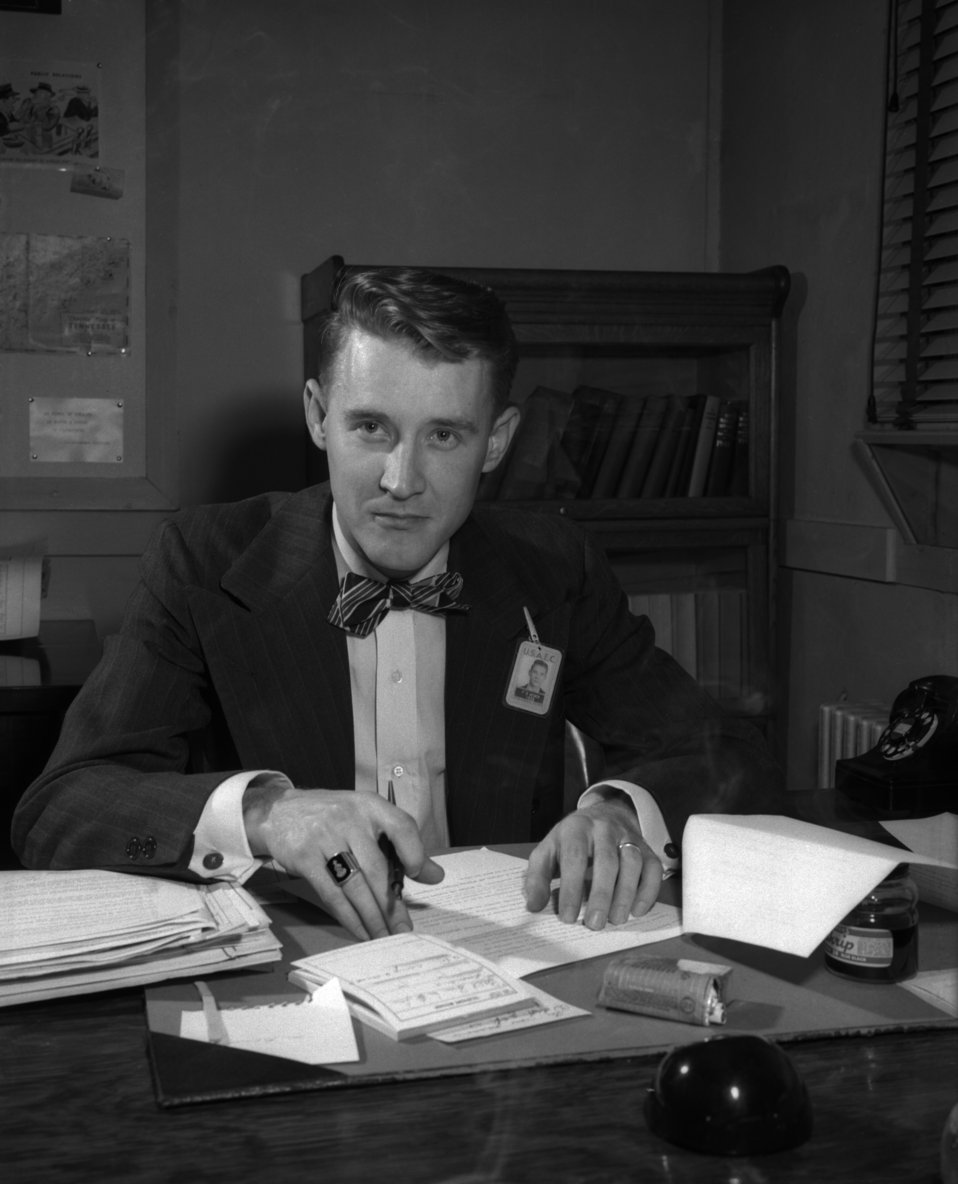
Portrait Seymour Henck Oak Ridge

006856-2 DOE photo by Ed Westcott

Portrait in office Seymour Henck Oak Ridge Tennessee 12/1950